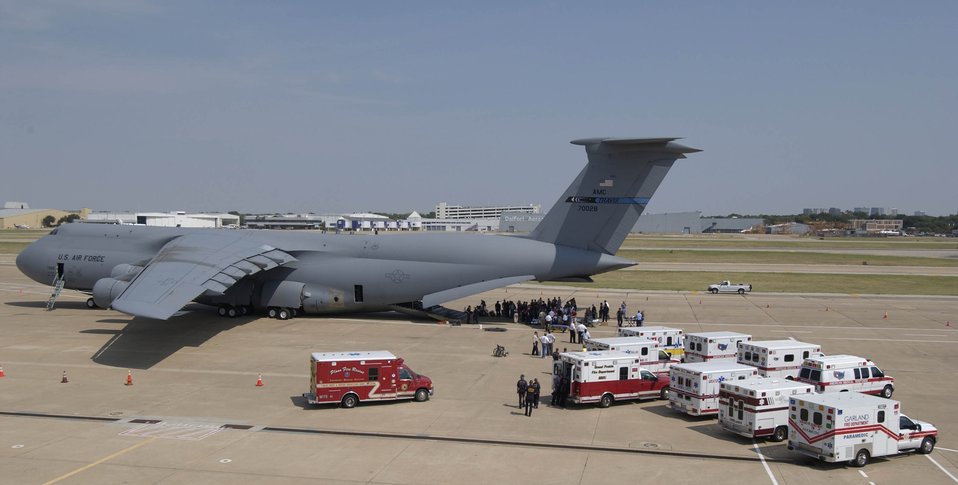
Before the storm

DALLAS -- Hospital patients from Beaumont, Texas, are taken off a C-5 Galaxy Sept. 23 en route to one of the many medical facilities set up to care for evacuees from the path of Hurricane Rita. The aircraft is from the from the 21st Airlift Squadron, Travis Air Force Base, Calif. The U.S. Air Force is contributing to the Hurricane Rita humanitarian assistance operations being led by the Federal Emergency Management Agency in conjunction with the Department of Defense.